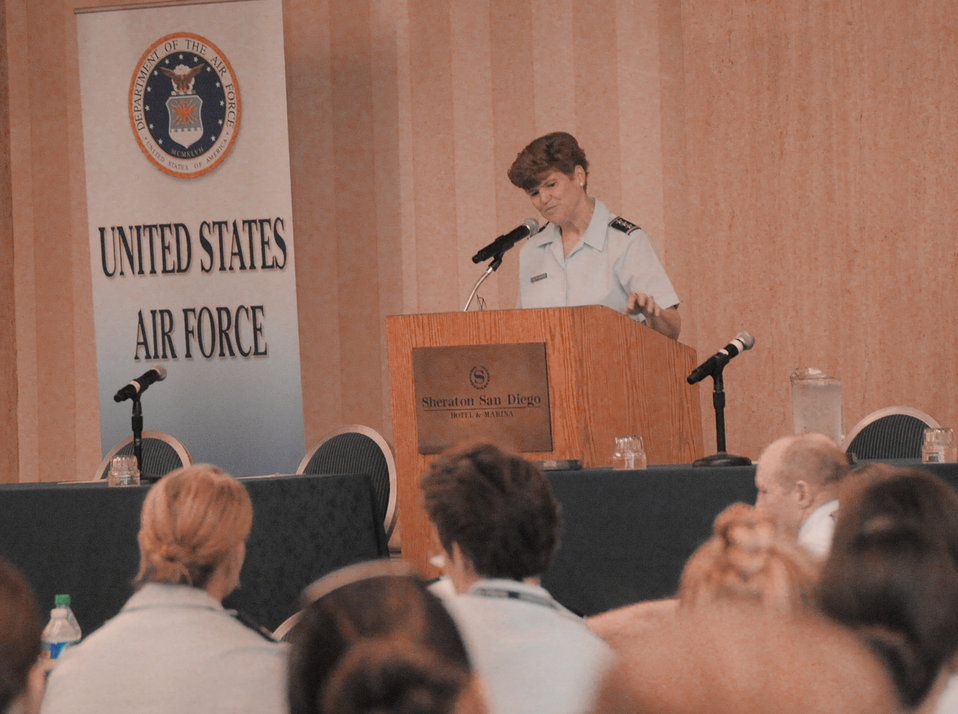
Air Force pioneer speaks at women's conference

Lt. Gen. Janet Wolfenbarger speaks to more than 130 Airmen on her experiences and lessons learned during the Joint Women's Leadership Symposium March 16, 2011, in San Diego, Calif. Military women from across the nation have gathered here March 15 and 16 to focus on professional development. General Wolfenbarger is the vice commander of the Air Force Materiel Command.